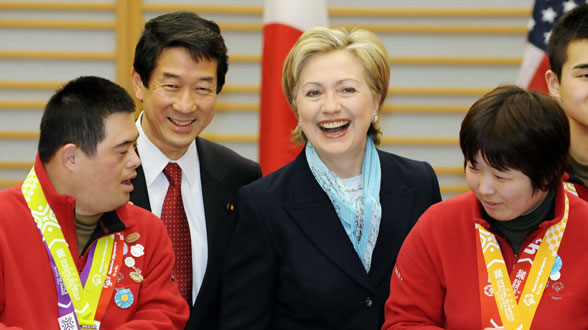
Secretary Clinton With Japanese Special Olympic Team

Secretary Clinton shares a group photo with Japan's Special Olympics team at Haneda Airport in Tokyo, Japan February 16, 2009.